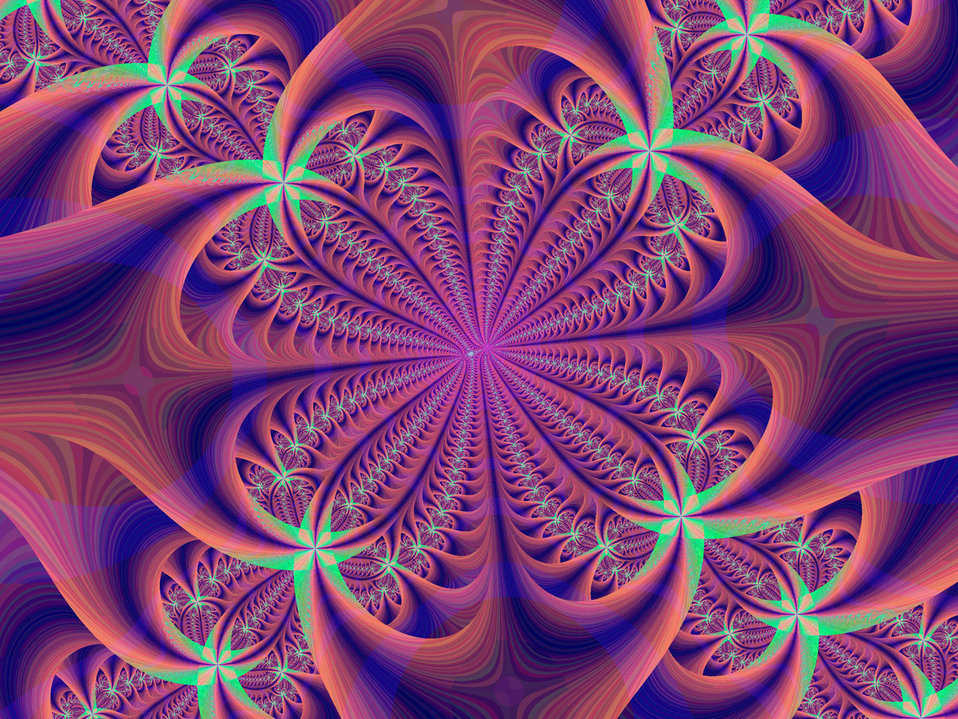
Fractal flower

Fractal in red, green and purple.